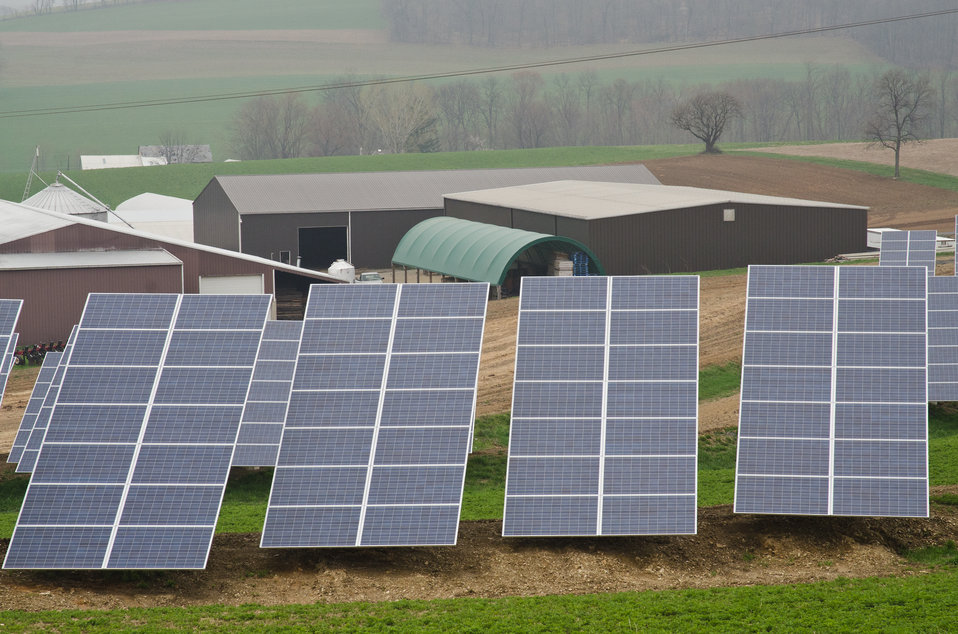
Heidel Hollow Farms, on Wednesday, April 20, 2011, has been a family owned farm since 1852 and is currently an 1,800 acre operation in Germansville, PA. Led by David Fink, President of Heidel Hollow Farms, they mainly produce and compact hay for exportand grow produce on 300 acres for local. With the financial help of the U.S. Department of Agriculture (USDA) an 896 panel solar array was recently installed on non farmable diversion ditches. Rated at 200 kilowatts, they project 240 megawatts of electricity to be produced each year, providing up to 70% of the farms electrical needs. Additionally, USDA financial assistance made it possible to replace the hay compactor’s diesel engines with clean low-maintenance, low operating cost electric motors to power the compactor's hydraulic system. The compactor increases the density of baled hay by two and half times for more efficient shipping to overseas customers.